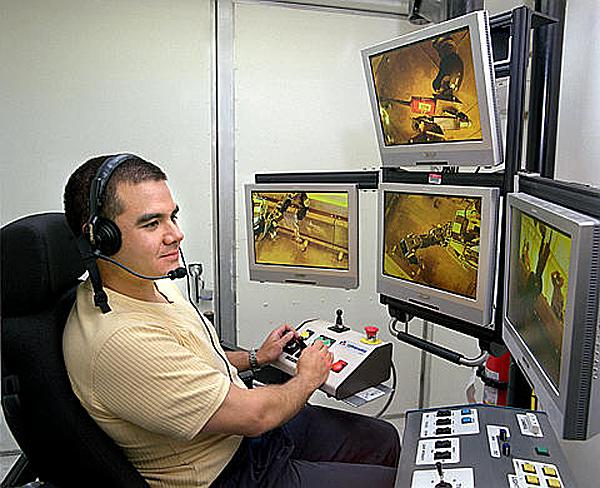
HAMMER OPERATOR MANIPULATES A ROBOTIC ARM MOUNTED ON THE END OF A BACKHOE FOR PIT VIPER SYSTEM SIMULATION.